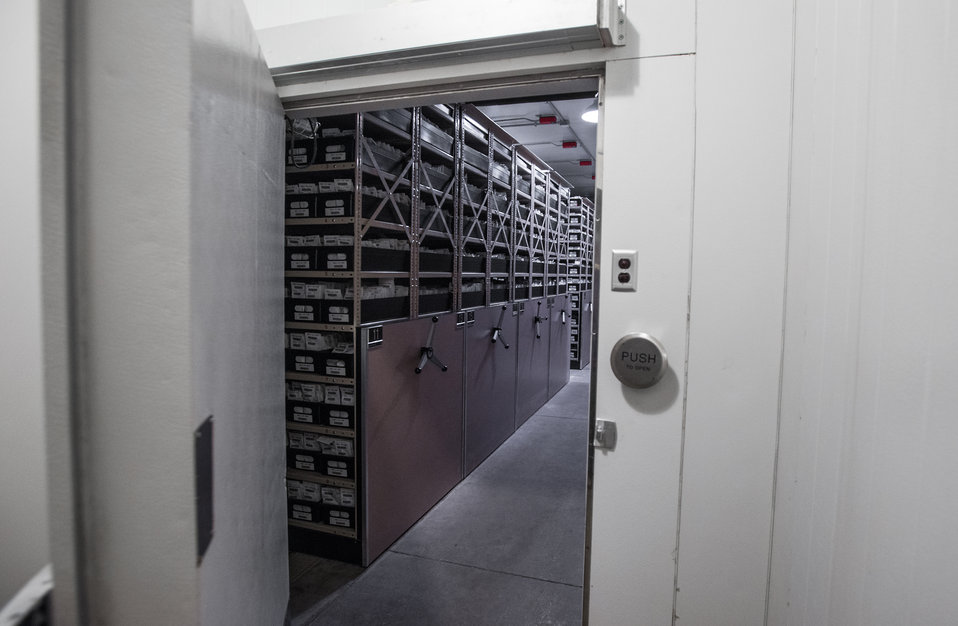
This is the U.S. Department of Agriculture's (USDA) Agriculture Research Service (ARS) National Center for Genetic Resources Preservation (NCGRP) National Plant Germplasm System (NPGS) cold storage vault, in Ft. Collins, CO on Wednesday, Nov. 6, 2013. This secure, long-term storage facility contains nearly 1 million samples of more than 13,200 plant species from the NPGS and from other international plant gene banks, as well as other U.S. government land management agencies. Most of the samples are preserved in the form of seeds. Some germplasm is also preserved as buds, cuttings, and tissue cultures. The 20 NPGS gene banks across the U.S. safeguard, study, and distribute these plant samples, each collected at a particular time and place, including modern and old varieties, wild relatives of crop plants, and genetic stocks. Seeds are packaged in moisture proof foil bags for cold vault storage at -18 °C (0 °F). The packets of seeds are organized in high-density rolling shelves. NCGRP seed preservation protocols are based on more than 50 years of experience and research. The facility opened in 1958 and was expanded in 1992. Preservation of diversity of plant genetic resources helps farmers and conservationists face challenges from climatic change, the spread of new diseases, destructive pests, and abiotic stresses such as drought and salinity.